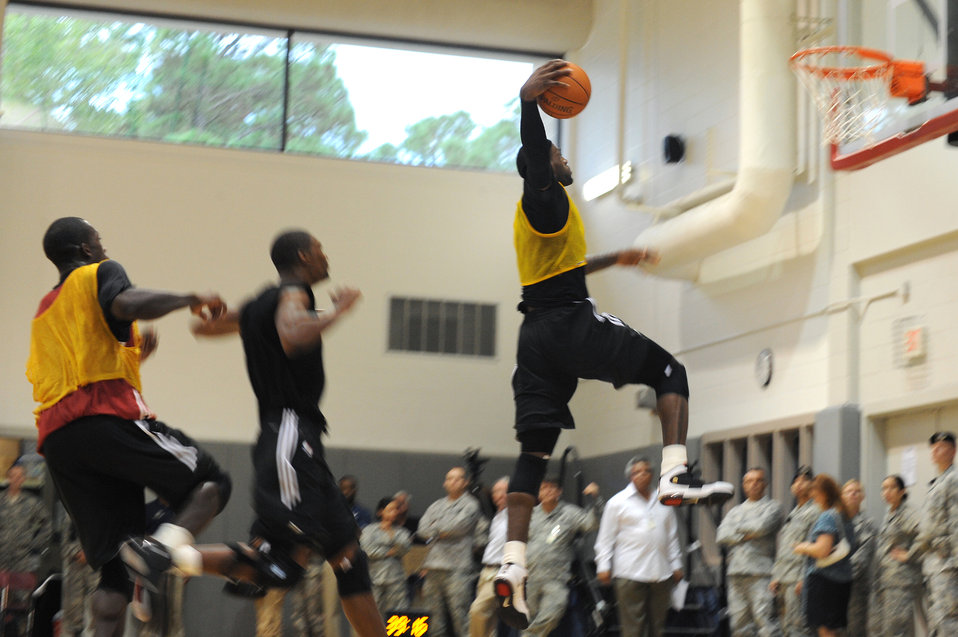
Miami HEAT at Hurlburt

LeBron James (right) prepares to dunk a basketball as fellow teammates Dwyane Wade (left) and Chris Bosh (center) watch during a preseason practice session Sept. 28, 2010, at the Aderholt Fitness Center at Hurlburt Field, Fla. The team will use the fitness center for their week-long training camp. Wade, James and Bosh are professional basketball players with the Miami Heat.